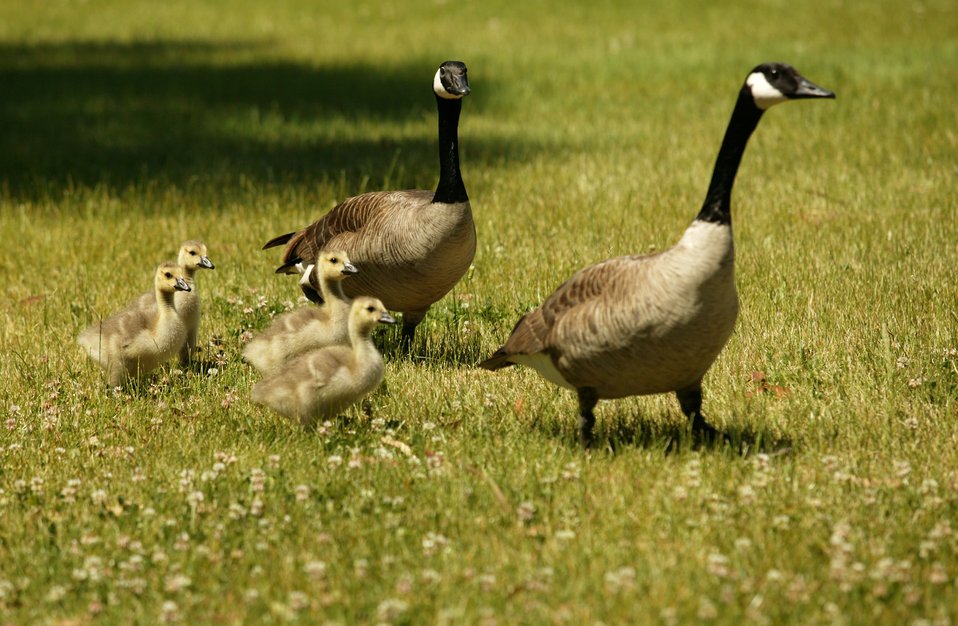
This family of Canada geese is just one of many that call Lawrence Livermore National Laboratory their home. Each spring, they return to the grassy areas and deliver their offspring.